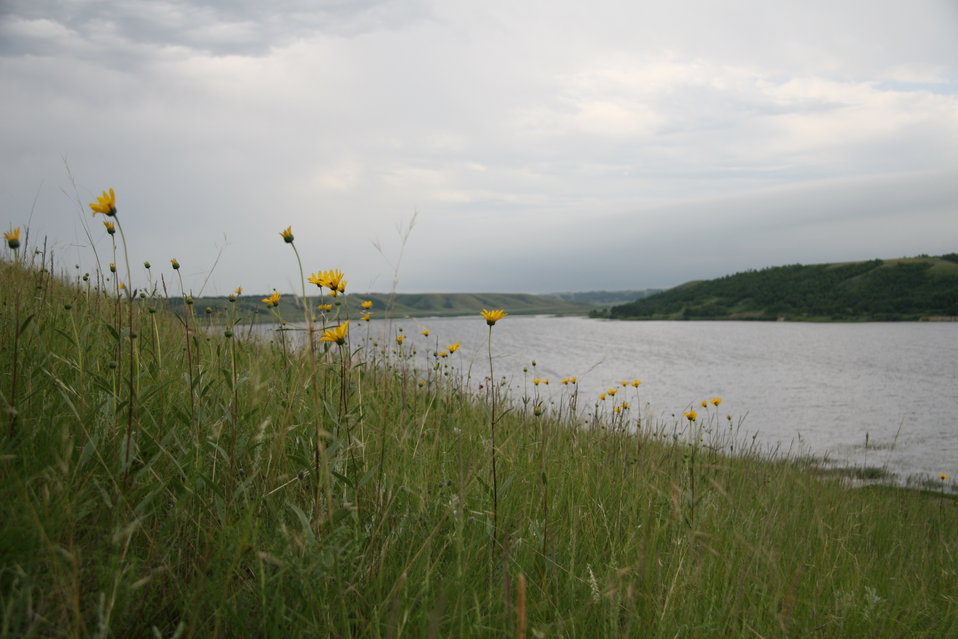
Wildflower Walk Program

A Wildflower Walk was held on Munch's Coulee National Recreation Hiking Trail on July 19, 2011 at Des Lacs National Wildlife Refuge in North Dakota. The trail offers a great view of Des Lacs lake as well as some great prairie habitat!